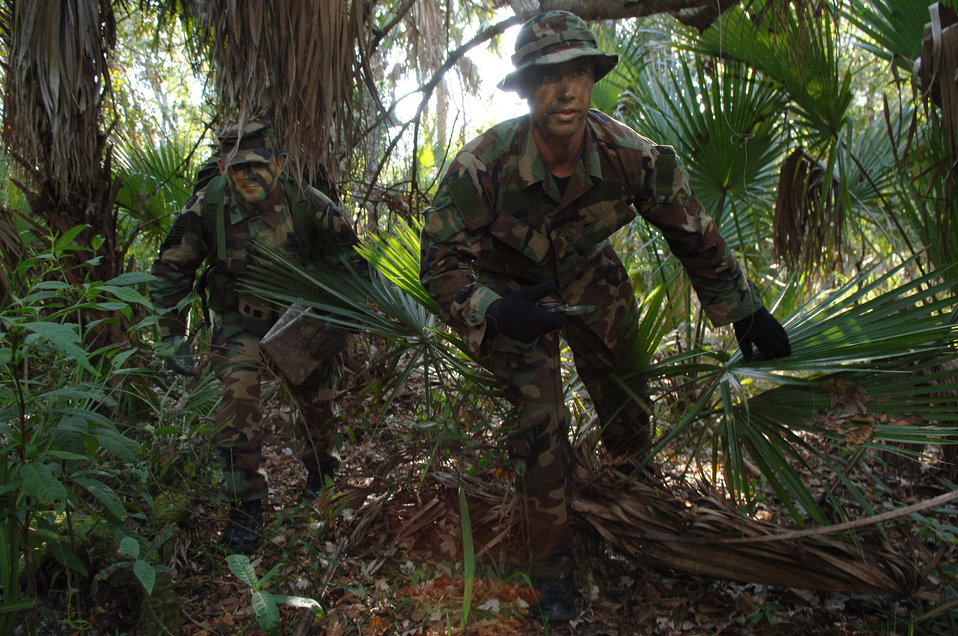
Atlantic Rescue

Technical Sgt. Jesse Arnold (left) and Senior Airman Ryan Gaspard practice evasion movements during Exercise Atlantic Rescue at Avon Park, Fla., Nov. 1. They are survivial, evasion, resistance and escape, or SERE, specialists. Sergeant Arnold is stationed at Langley Air Force Base, Va. and Airman Gaspard is at Mountain Home AFB, Idaho.